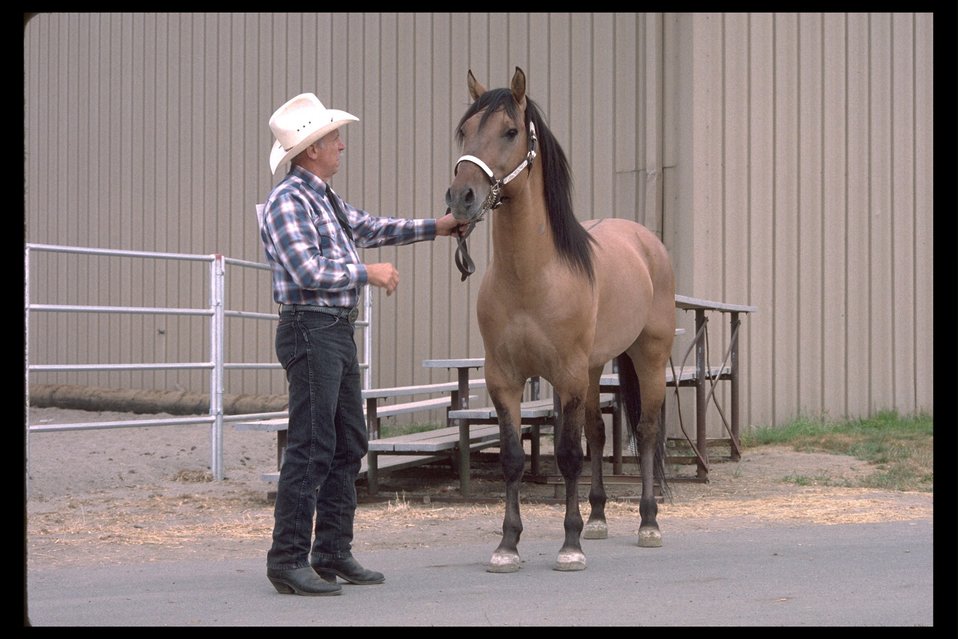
Proud adopter shows off his adopted Kiger Mustang in Longview, WA adoption and horse show.